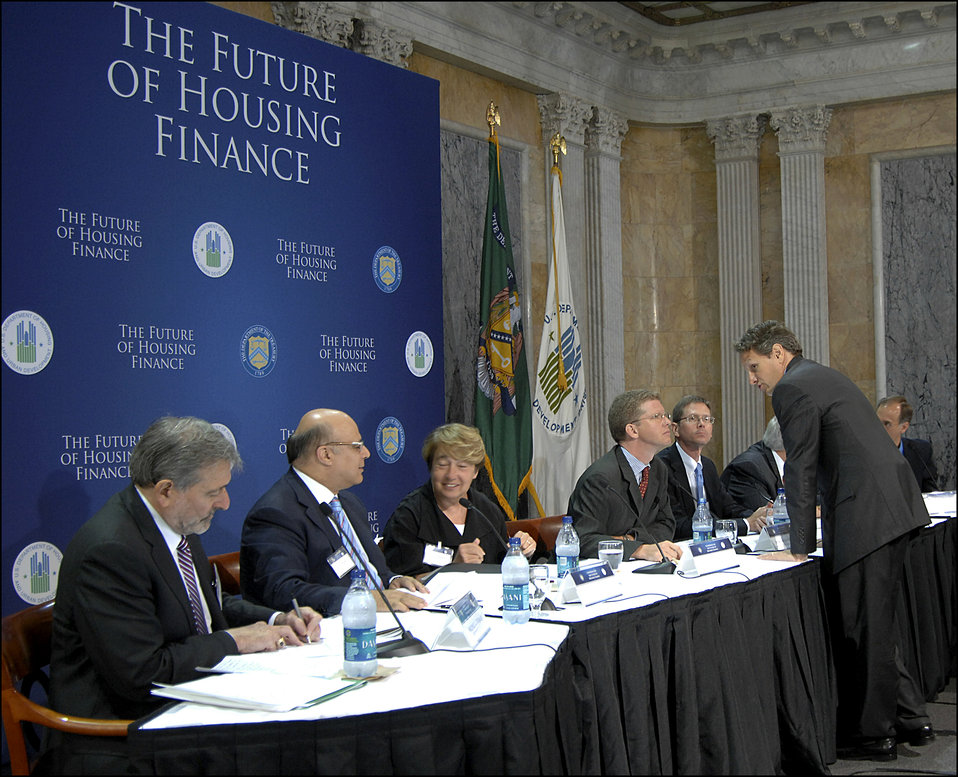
Conference on the Future of Housing Finance, 08/17/2010

Secretaries Donovan and Geithner talk before the start of the second panel on Housing Finance Reform and Broader Housing Policy Goals, moderated by HUD Secretary Donovan.